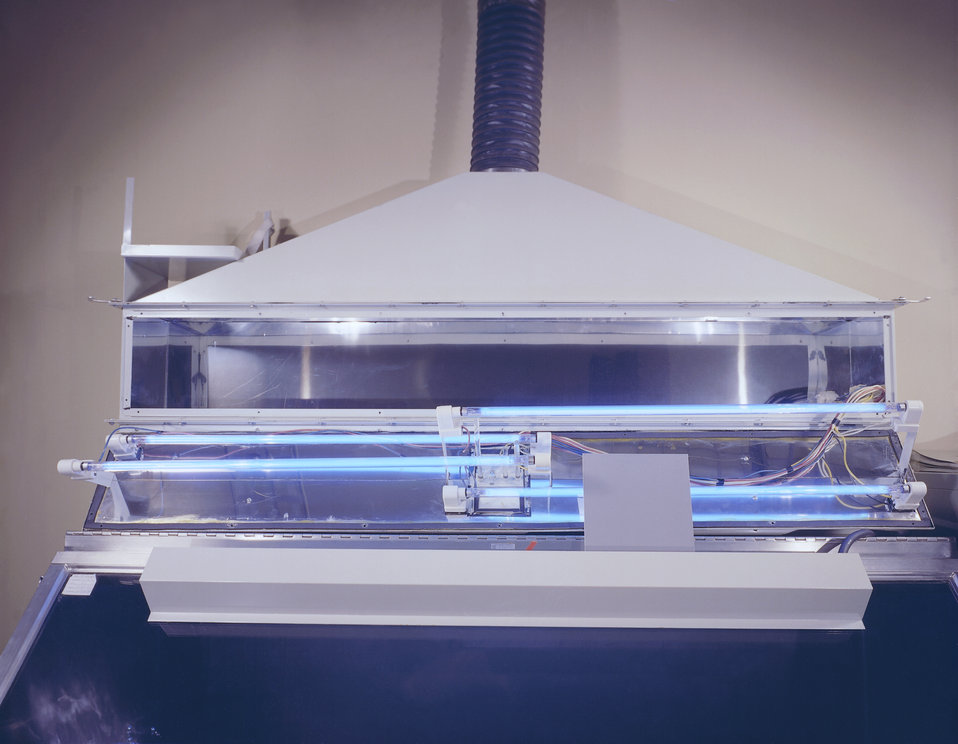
From 1975, this image depicted a biological safety cabinet, which appeared to be equipped with a ultraviolet (U.V.) chamber, and a ventilated hood, able to evacuate the hooded area air by drawing fresh air into the hood, thereby, keeping it out of the laboratory environment.